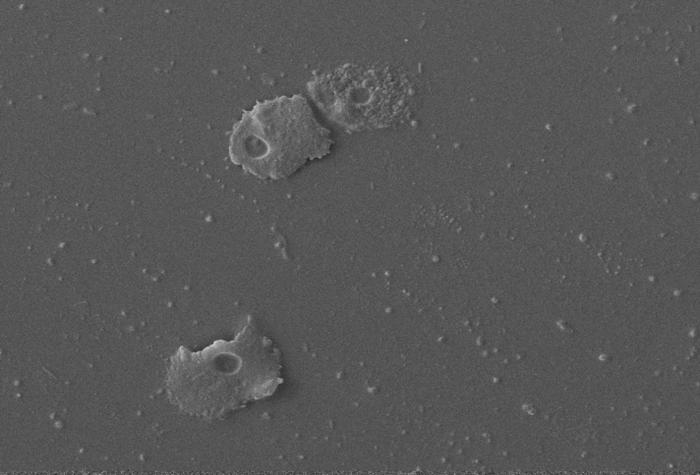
This scanning electron micrograph (SEM) revealed some of the ultrastructural features seen on the surface of a number of Acanthamoeba polyphaga protozoa. Note the amorphous nature of the organisms' exterior from which pseudopodia, from the Latin pseudo = false, and podia = feet, can extend. These pseudopodia enable the amoeba to move about, and grasp objects in its environment.